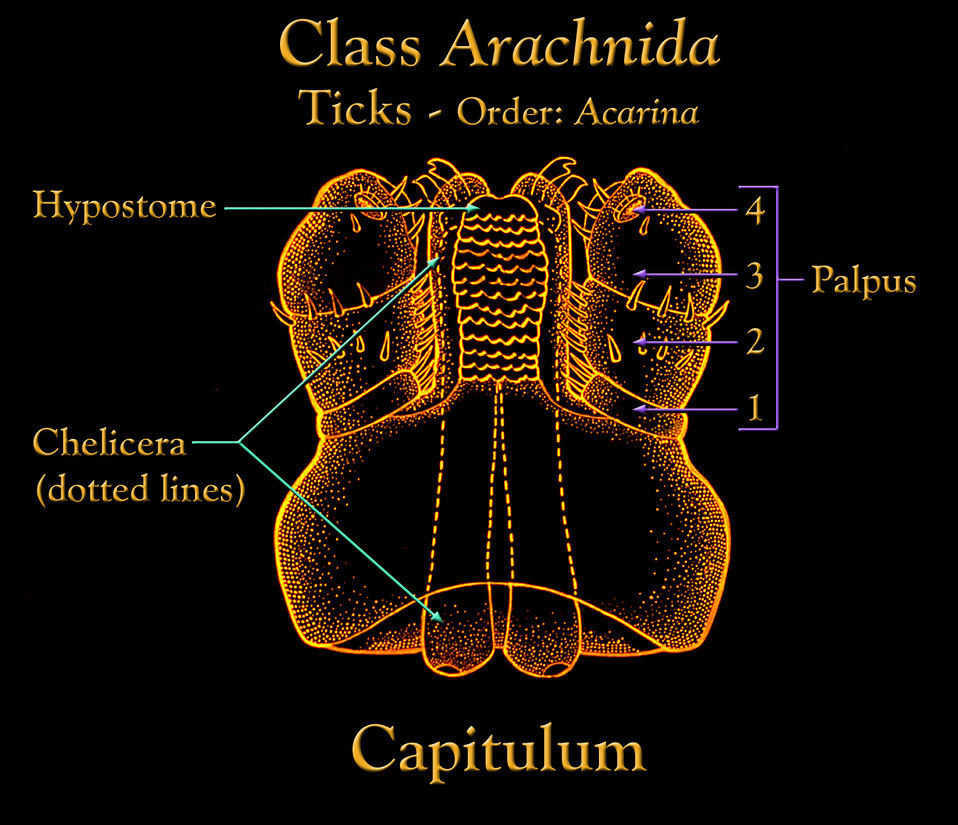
At its anterior end, ticks possess what is termed a 'capitulum', or 'little head', made up of the arachnid's mouthparts.